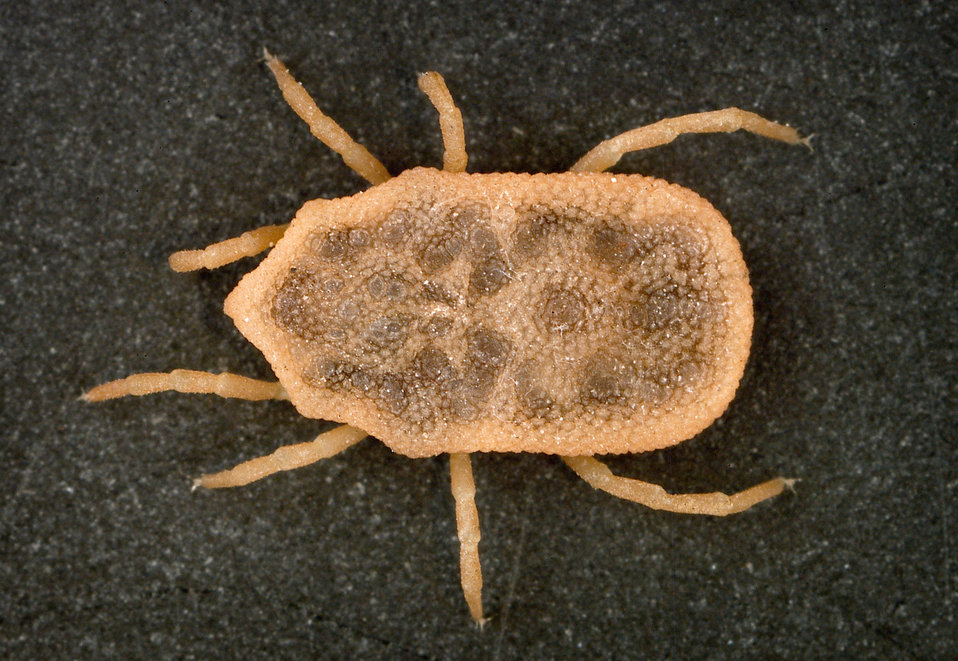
This is a dorsal view of the 'soft tick' Carios kelleyi, formerly Ornithodoros kelleyi, or the 'Bat Tick'.